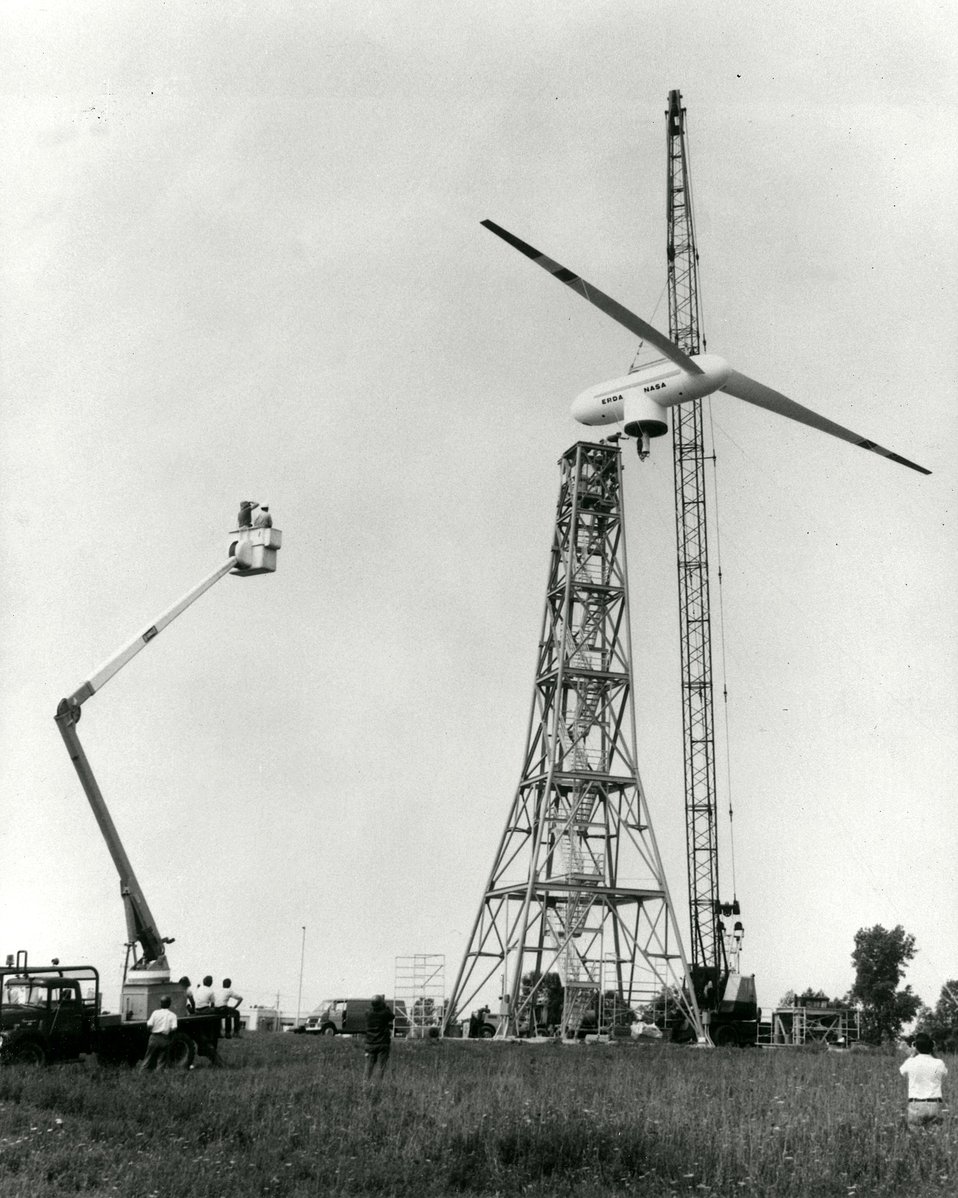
A 125-foot-tall windmill has been developed for the U.S. Department of Energy (DOE) by NASA's Lewis Research Center in Cleveland, Ohio. c. 1975